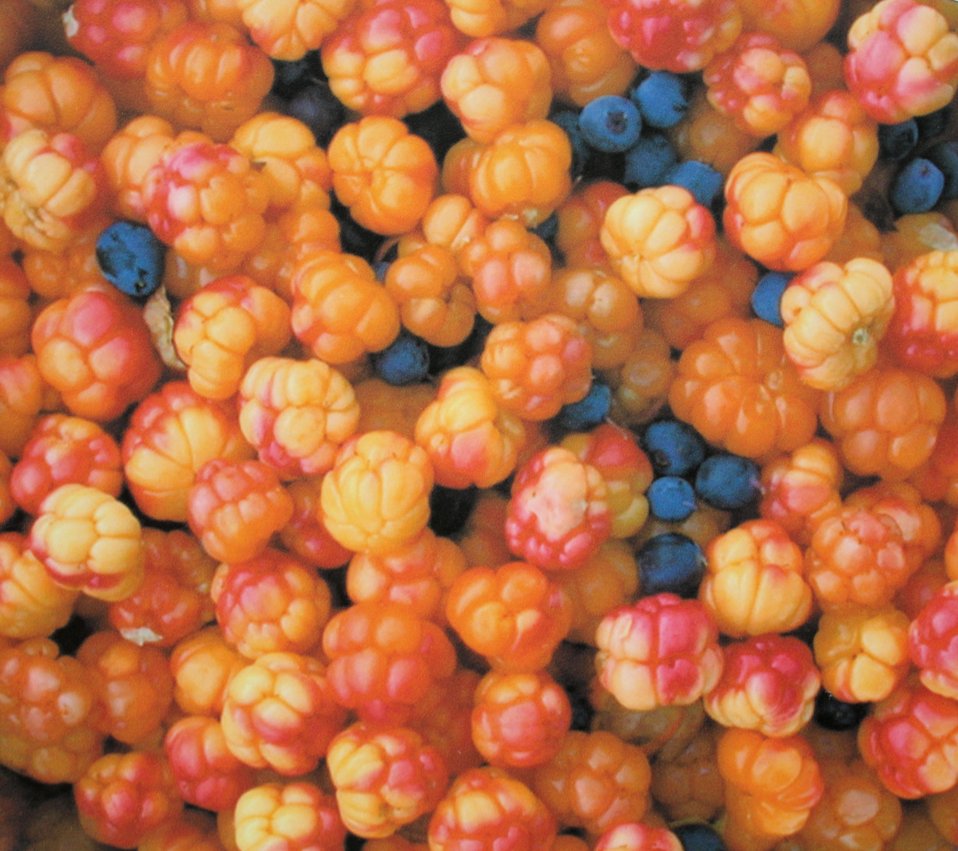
Cloudberries and blueberries (a photograph of a photograph at Tombstone Territorial Park) in Ogilvie Mountains.